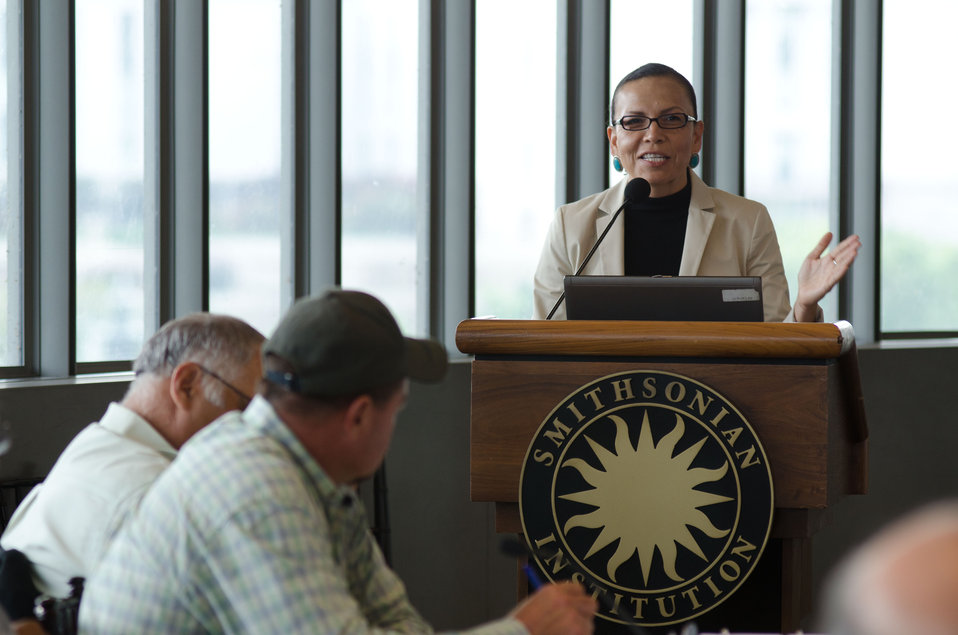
White House Senior Advisor to the President for Native American Affairs Jodi Gillette speaks at the first business meeting of the U.S. Department of Agriculture’s (USDA) Council for Native American Farming and Ranching (CNAFR) held at the National Museum of the American Indian in Washington, D.C., on Tuesday, Aug. 14, 2012. CNAFR was created to advise the Secretary on ways to eliminate barriers to participation for Native American Farmers and Ranchers in USDA programs. The Council was established as part of the Keepseagle settlement, and is conducted under the oversight of USDA's Office of Tribal Relations under the Office of the Secretary of Agriculture.